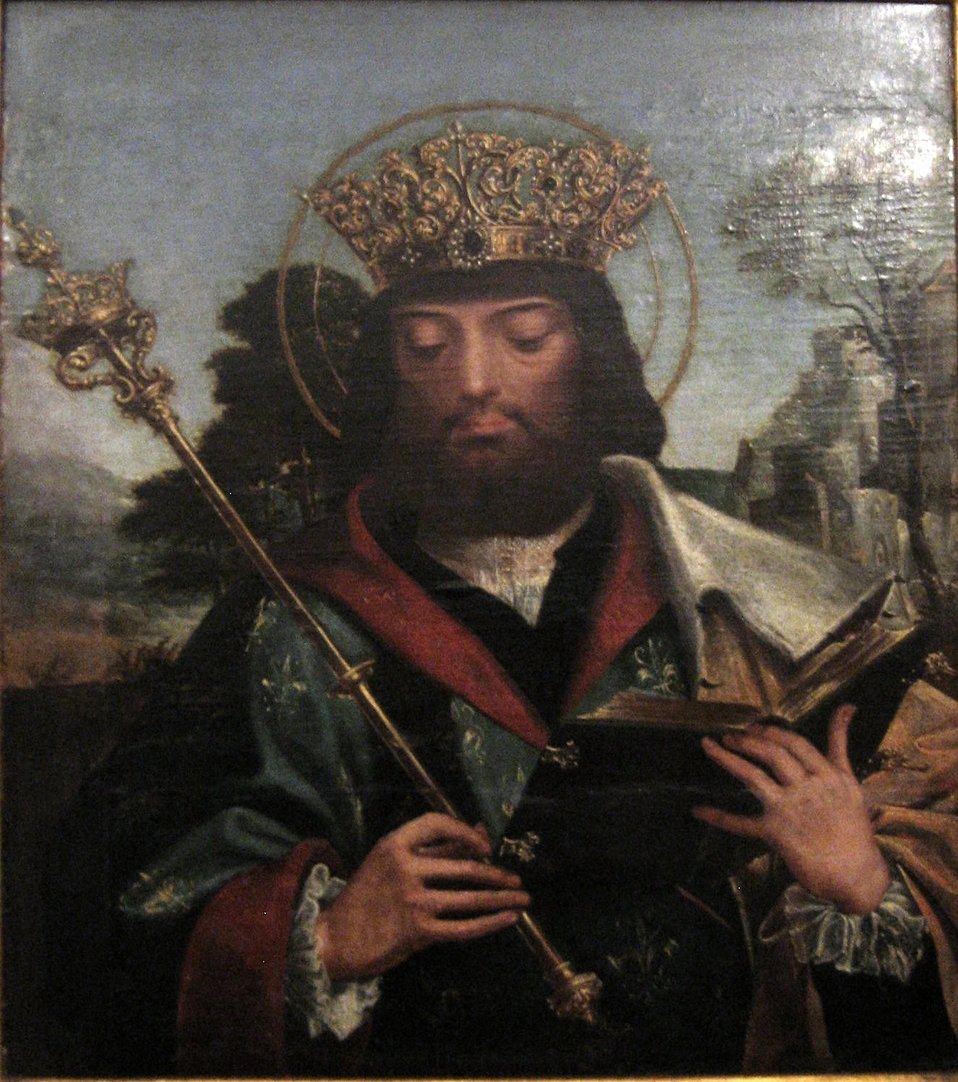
'Saint Louis, King of France', painting by the Master of Sardoal